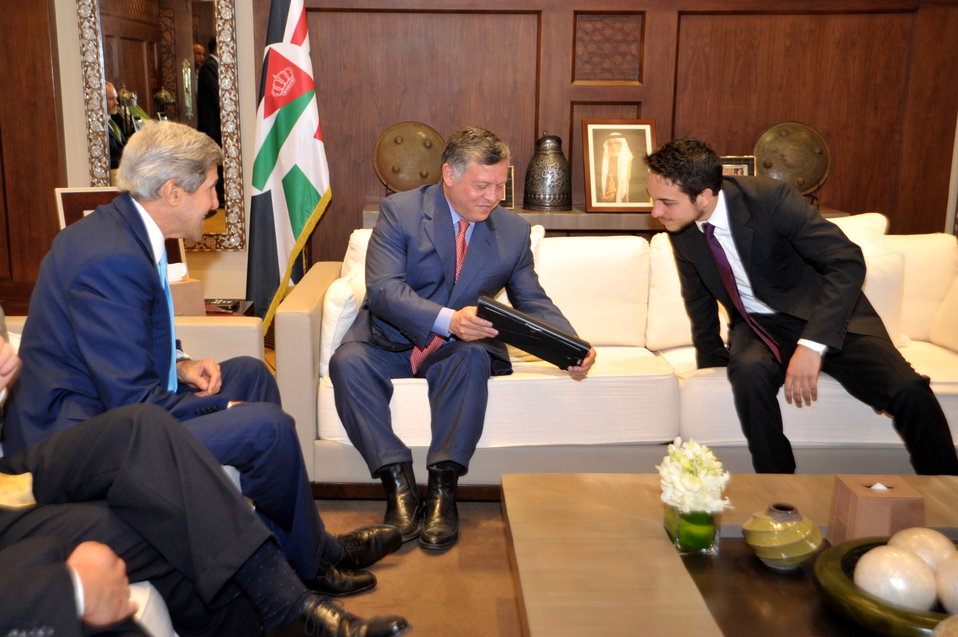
King Abdullah II and Crown Prince Hussein Admire a Photo

King Abdullah II shows his son, Crown Prince Hussein, a photo given to them by U.S. Secretary of State John Kerry at the start of a meeting at Al Hummar Palace in Amman, Jordan, on July 17, 2013.